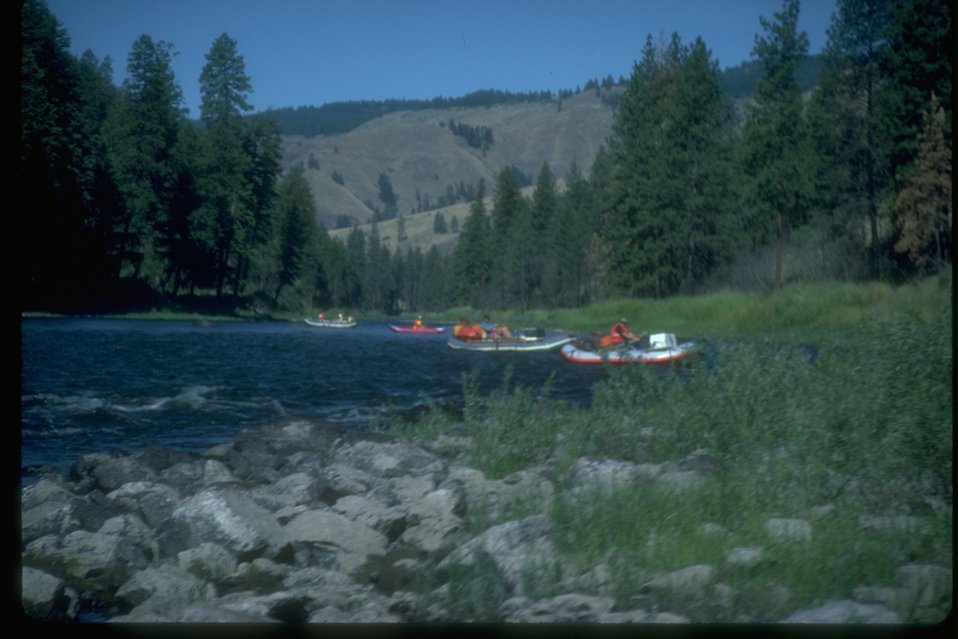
A large river being used by rafters for recreational use.